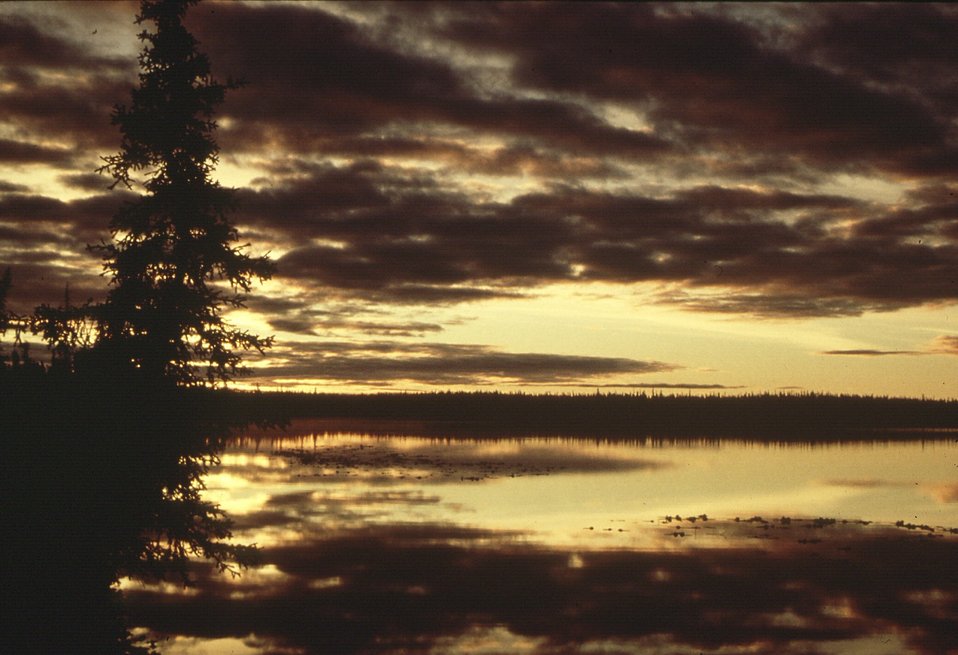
Sunset, West Fork, Gulkana NWSR